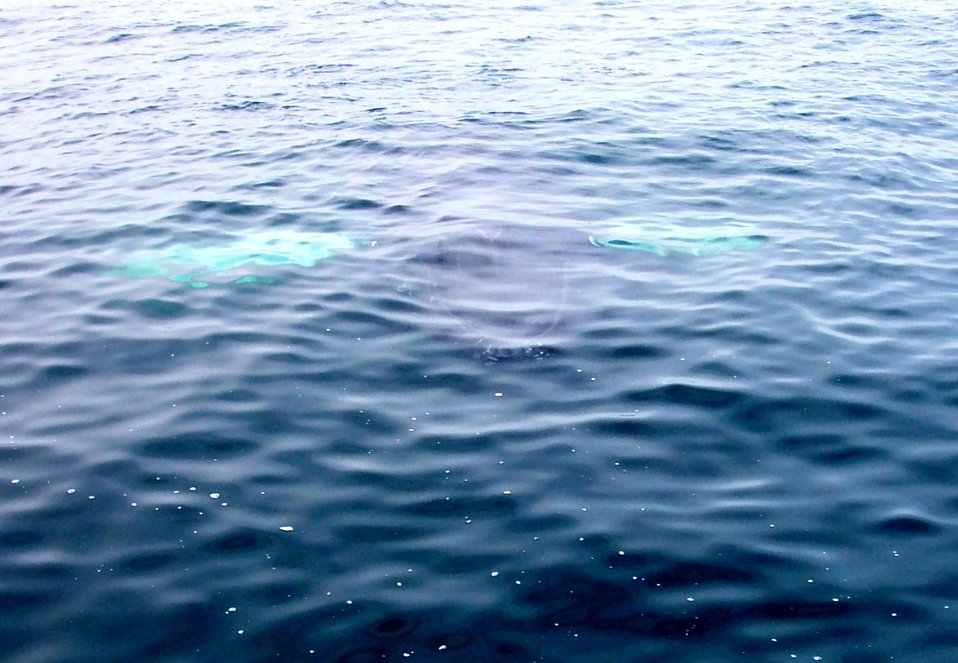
A humpback whale in the Gulf of Maine about 20 miles south of Bar Harbor.